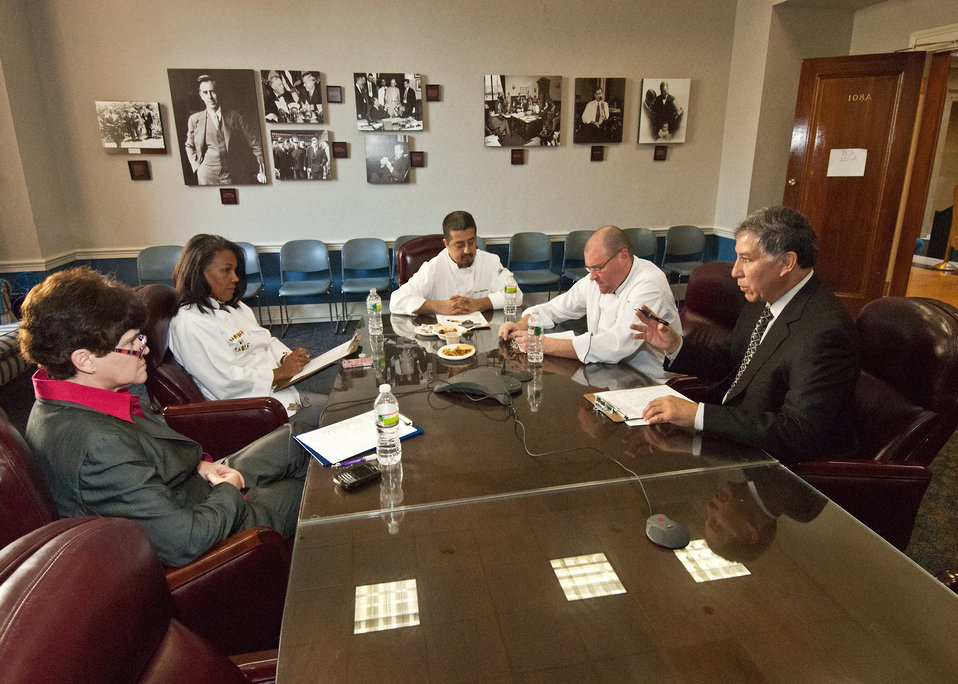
From left: Krista Hardin, Chief of Staff, Chef Toni Tipton-Martin, Chef Pedro Matamoros from 8407 Kitchen Bar, Corporate Executive Chef Lance Lemin and Ed Avalos, Undersecretary, Marketing and Regulatory Programs meet in the Henry A. Wallace Room at the U. S. Department of Agriculture to select the winner of the Second Annual USDA Chili Challenge Contest to celebrate Hispanic Heritage Month in Washington, DC, on Thursday, October 6, 2011. Employee chef volunteers along with Celebrity chefs used chili’s in delicious recipes to celebrate Hispanic cuisine. USDA’s traditional Chili Challenge trophy will be awarded to this year’s best-tasting chili.